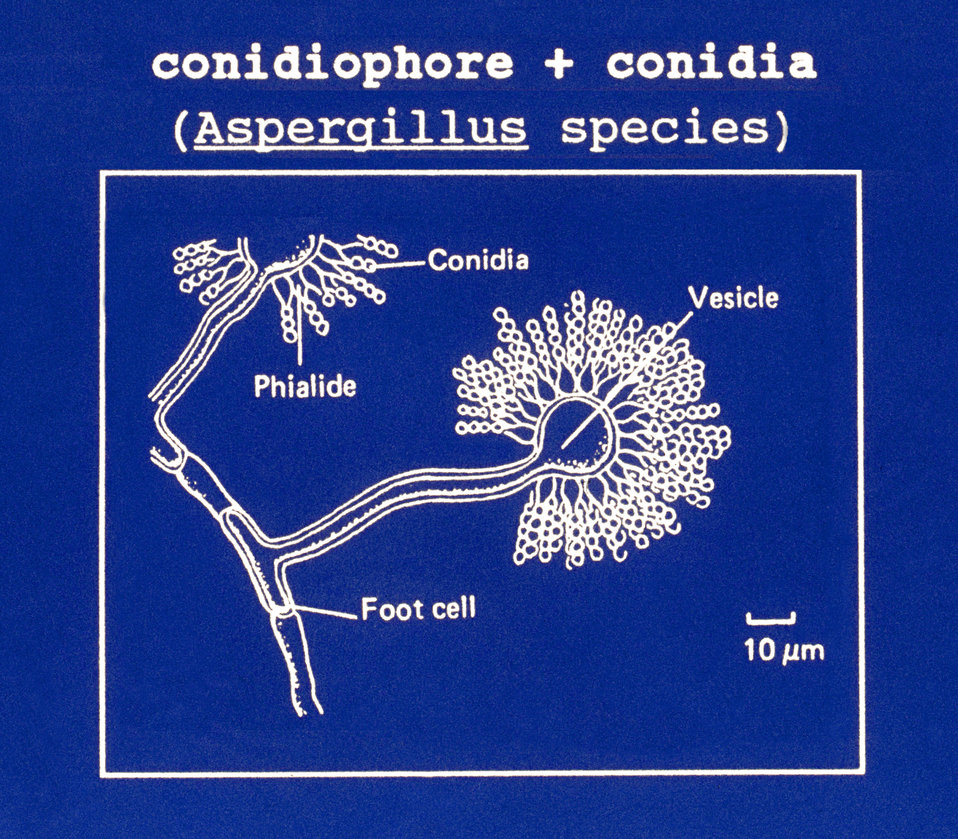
Illustration of asexual reproduction in ascomycetes: conidiophore with conidia (Aspergillus species)